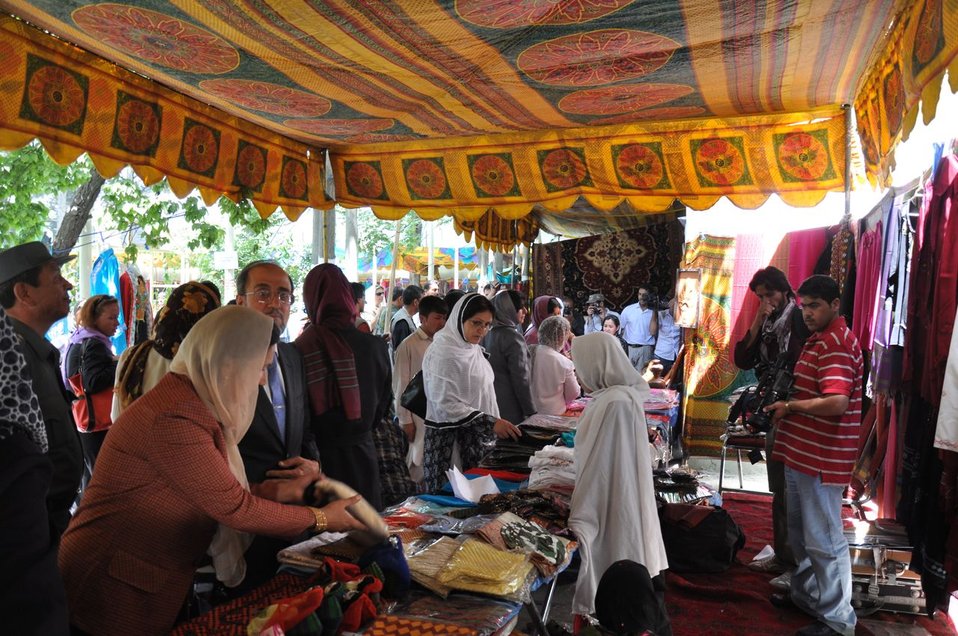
Mother's Day in Afghanistan